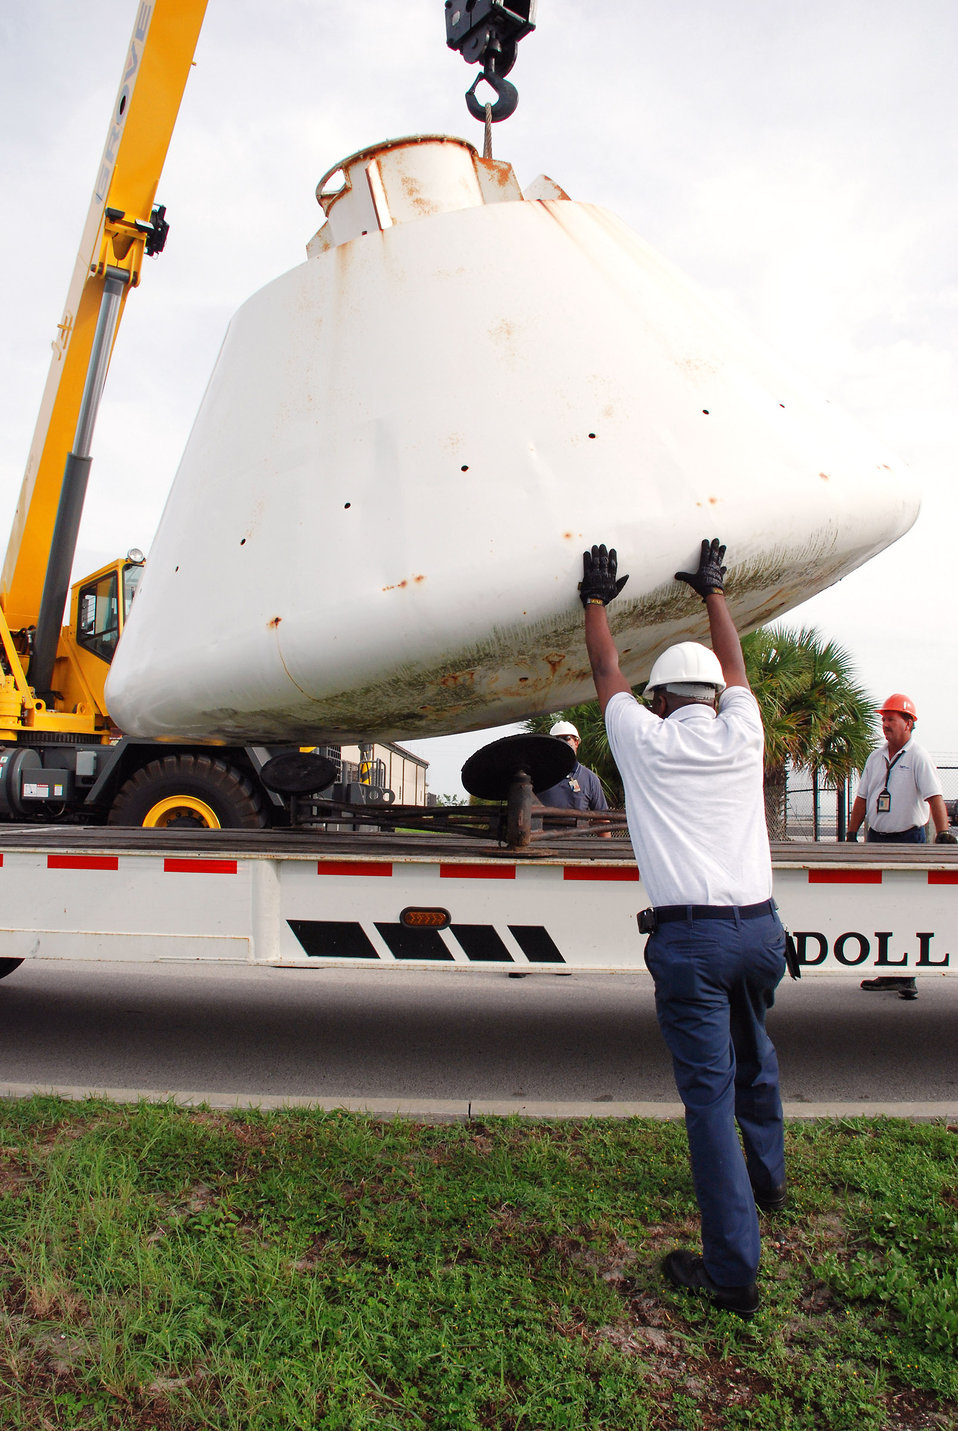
Historic capsule makes trip to body shop

Workers help guide the 9,000-pound Apollo Boilerplate #1206 capsule onto a flatbed truck for transportation to a local refurbishment facility July 1 at Patrick Air Force Base, Fla. On loan here to the Air Force Reserve's 920th Rescue Wing from the Smithsonian Institute's Air and Space Museum, the capsule was once used by Air Force rescue units to train for astronaut recovery during the Apollo and Skylab space programs.